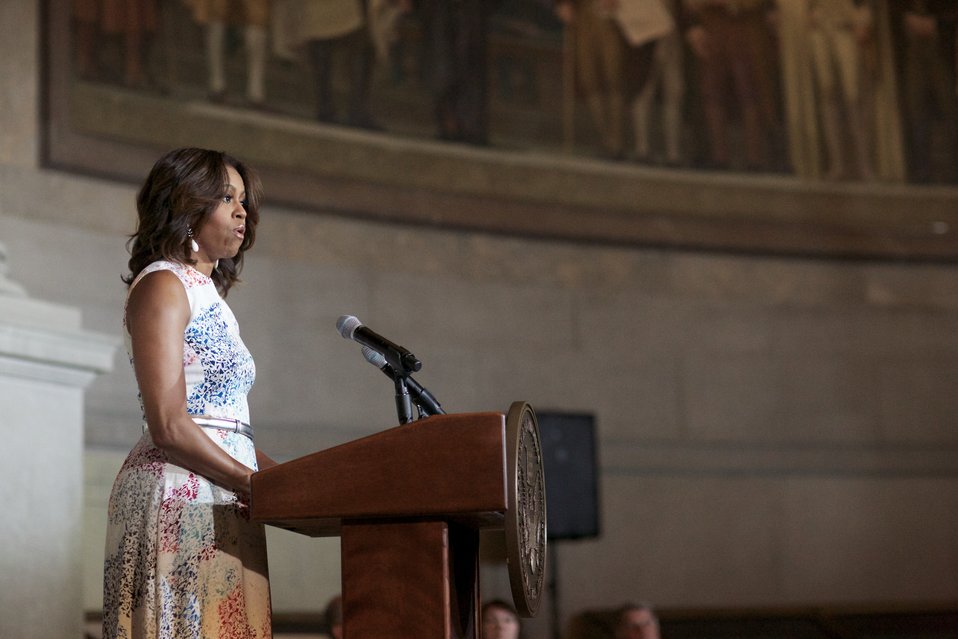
Naturalization Ceremony with Michelle Obama